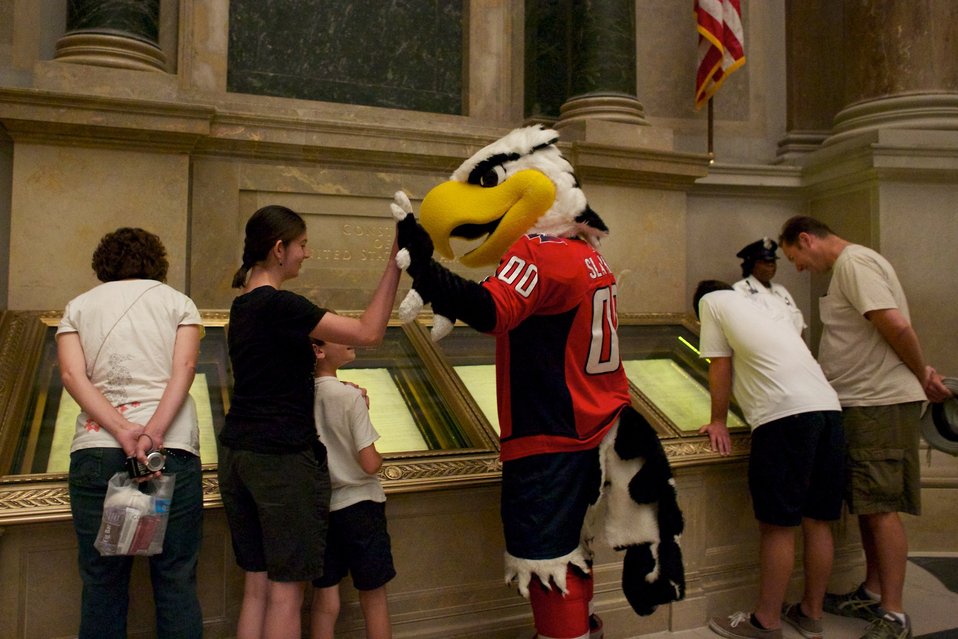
Washington Capitals mascot Slapshot visits the National Archives